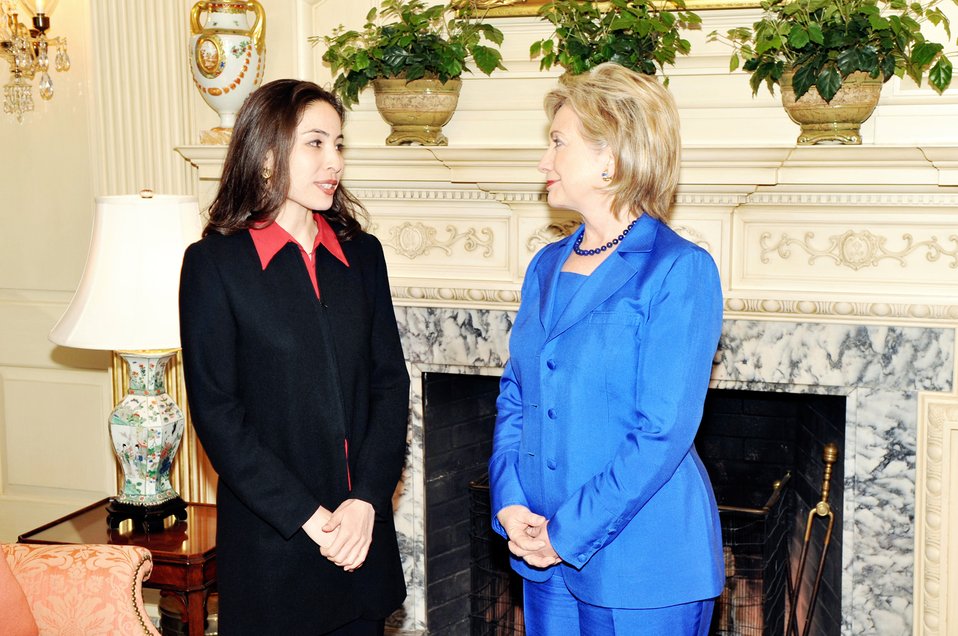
Secretary Clinton Meets With Roxana Saberi

U.S. Secretary of State Hillary Rodham Clinton meets with American Journalist Roxana Saberi outside the Secretary's office at the U.S. Department of State in Washington, DC May 27, 2009. [State Department by Michael Gross]